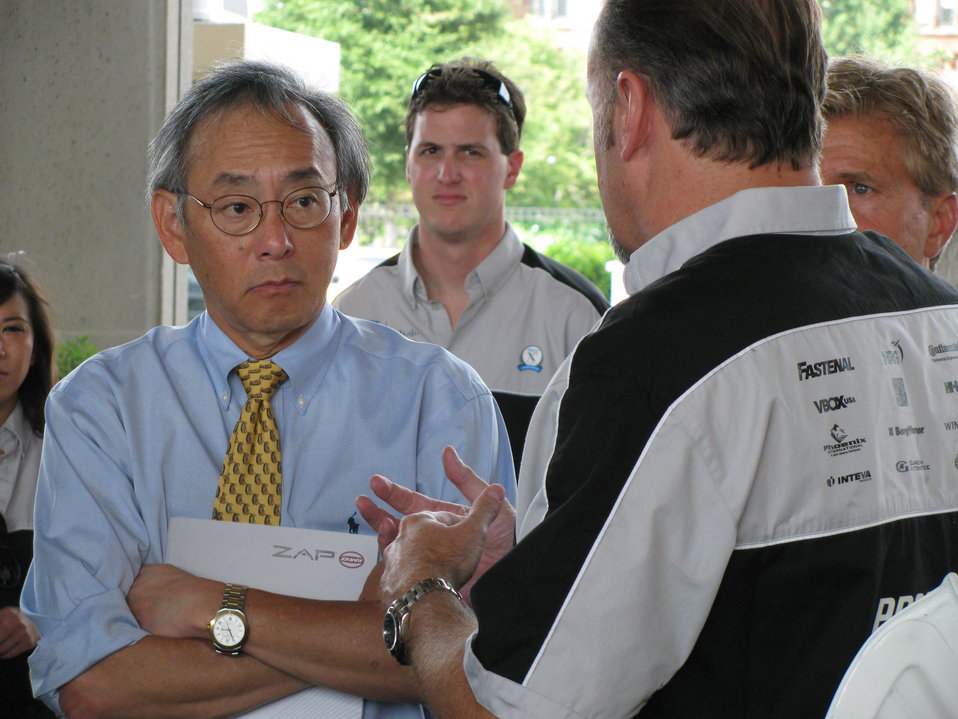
X Prize 055